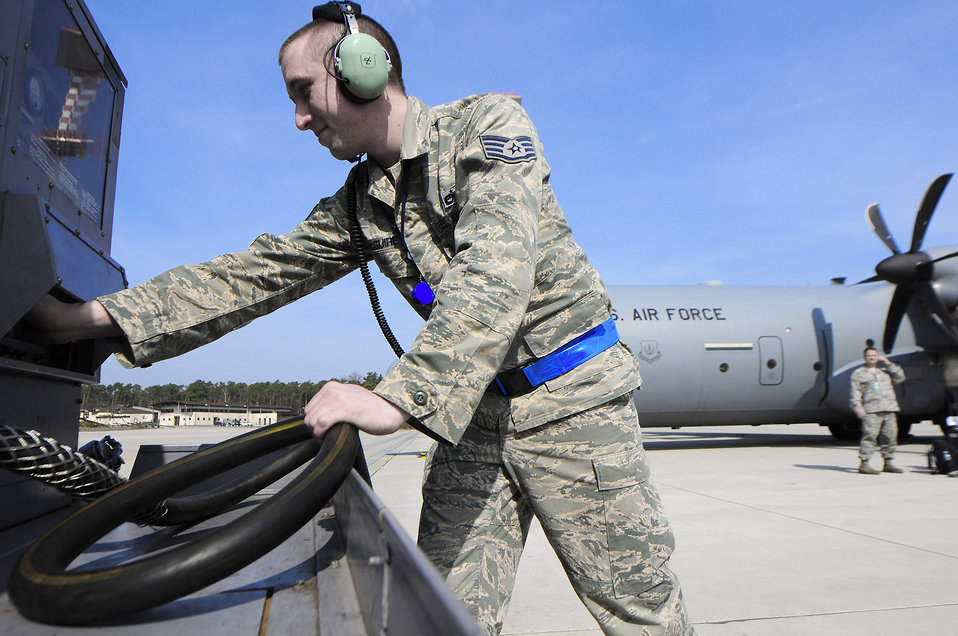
Airmen support Odyssey Dawn

Staff Sgt. Shawn McGuire applies external power to a C-130J Super Hercules March 25, 2011, at Ramstein Air Base, Germany, after its return from a mission in support of Operation Odyssey Dawn. McGuire is assigned to the 86th Aircraft Maintenance Squadron.